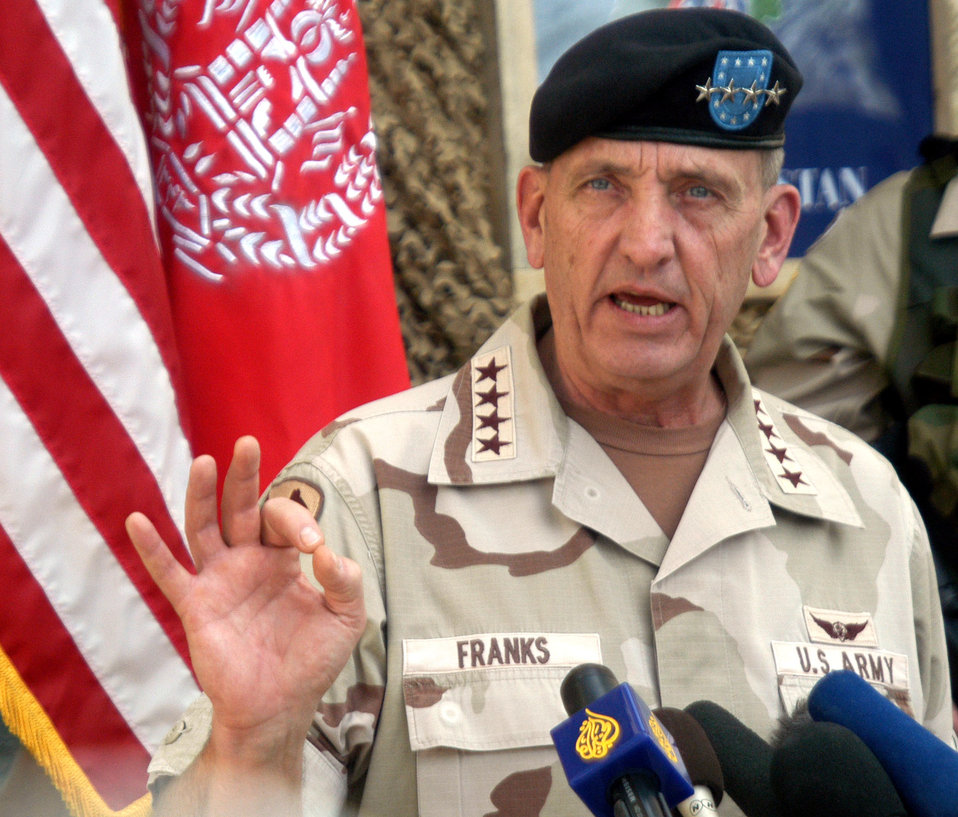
Words from the boss

OPERATION ENDURING FREEDOM -- Gen. Tommy Franks, U.S. Central Command commander, holds a media conference April 11 at Bagram Air Base, Afghanistan. Franks was at Bagram, which is located about 25 miles northeast of Kabul, to talk with coalition troops.